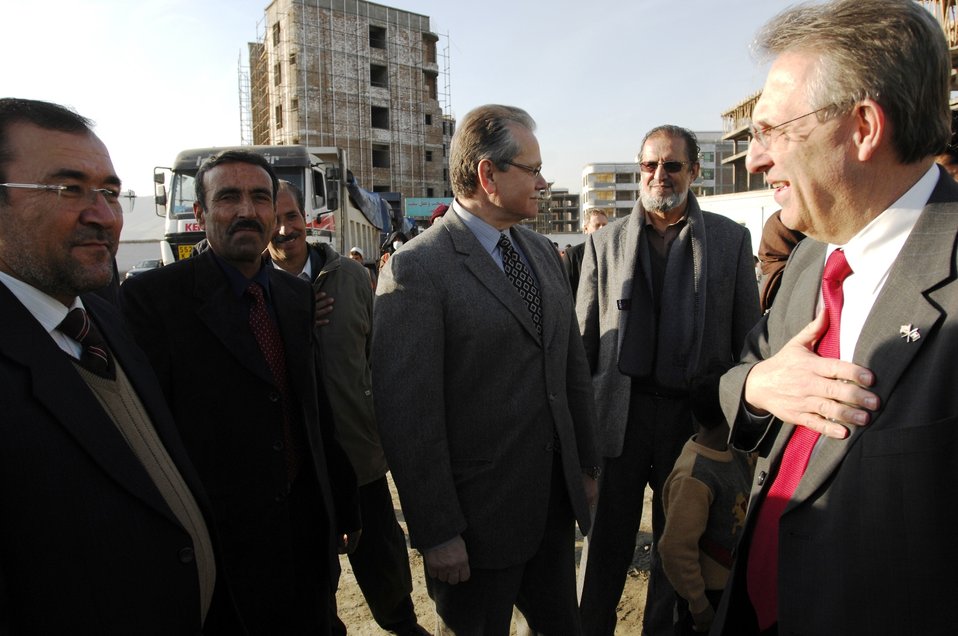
Care49